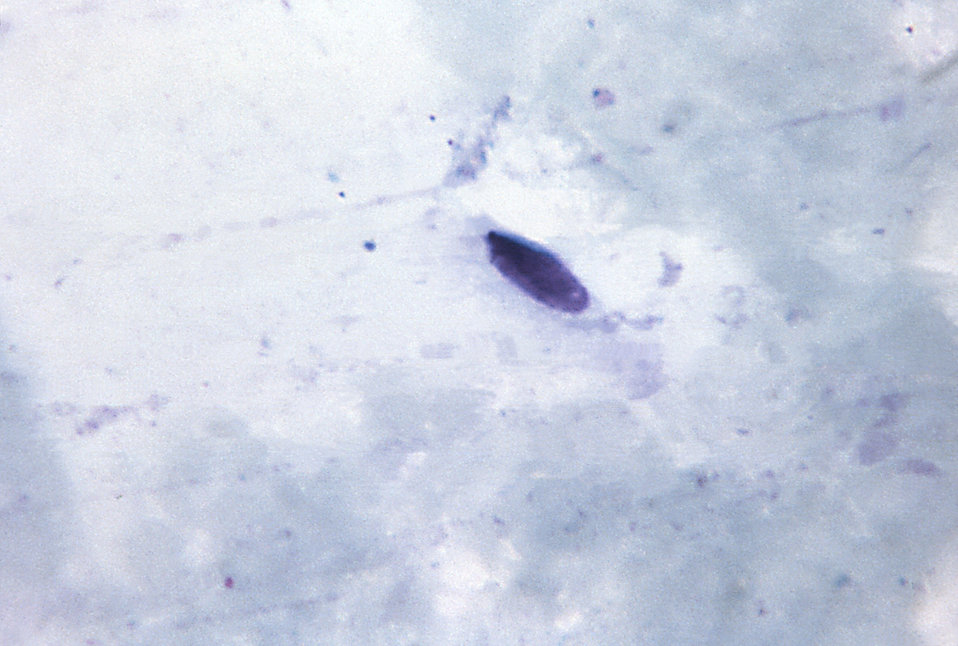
In this thick film micrograph, an elongated 'artifact-spore' closely resembles a P. falciparum gametocyte; Mag. 1125X.